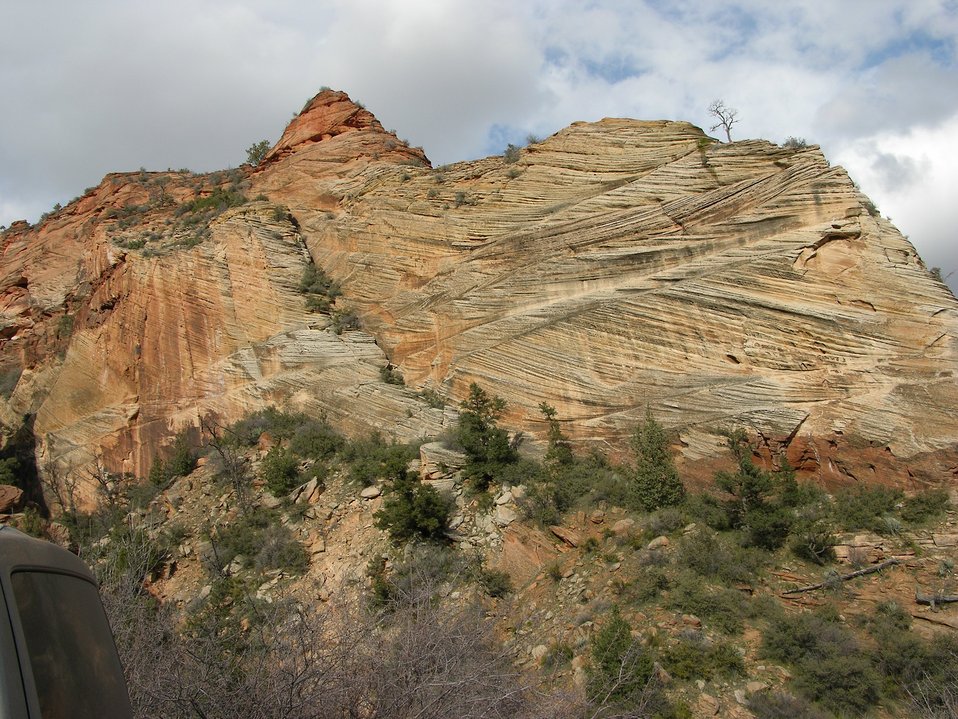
A view in Zion National Park